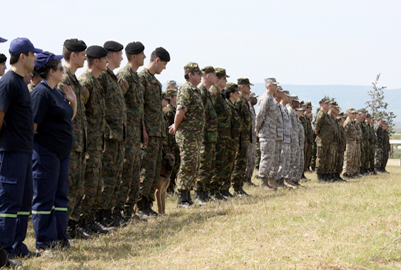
MEDCEUR 11

Service members from Macedonia, Montenegro, Bosnia and Herzegovina, Serbia, Slovenia, Norway and the U.S. stand at parade rest May 6, 2011, during opening comments at the Medical Training Exercise in Central and Eastern Europe 2011 opening ceremony in Macedonia.